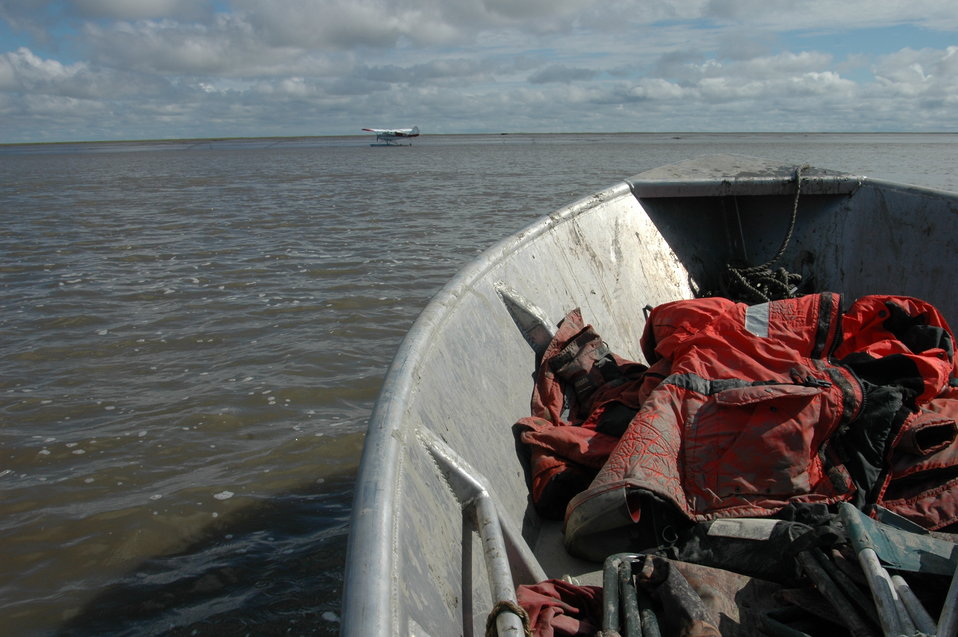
Boats and Planes

Boats and float planes are a major form of transportation for many of the projects on the Y-K Delta.

USFWS Yukon Delta NWR